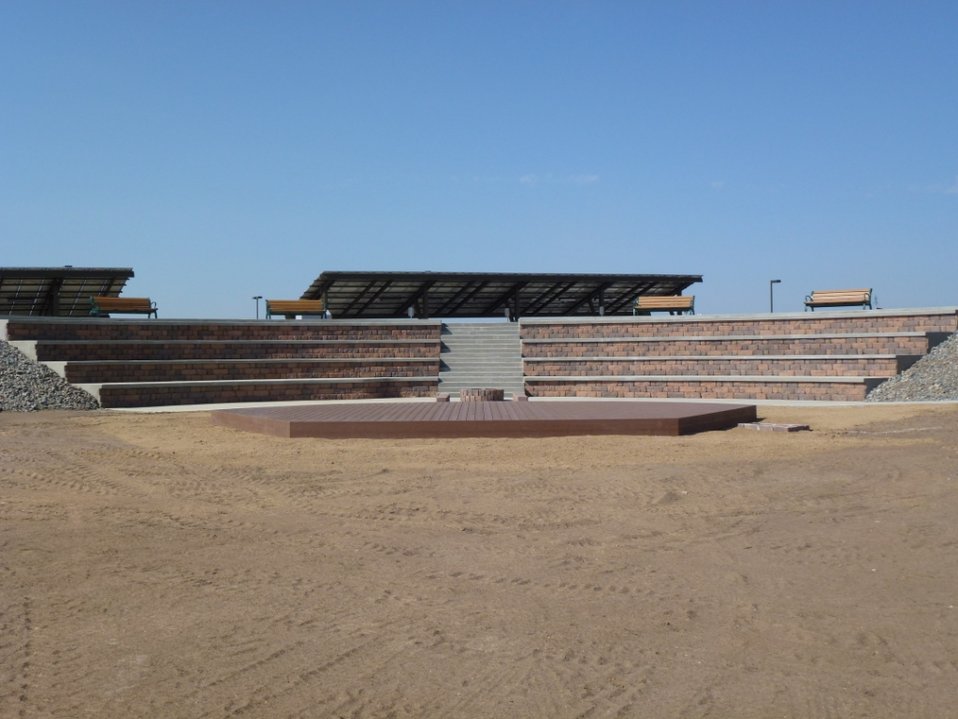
Rocky Mountain Arsenal National Wildlife Refuge’s Amphitheater

Thanks to the work of a Mountain-Prairie Region Refuge Maintenance Action Team (MAT), a new amphitheater was recently erected adjacent to the Rocky Mountain Arsenal National Wildlife Refuge’s visitor center in Commerce City, Colo.

The amphitheater is a fully accessible facility with seating for 175 to 200 spectators. It features a stage and fire pit for special programs. The addition of the amphitheater to the visitor center will enhance interpretive program delivery as part of the facility’s regular visitor services and will be used for special events. Commerce City has also expressed an interest in using the amphitheater for programs of its own.

The project was completed under budget and cost nearly half as much as the bids received from private contractors. According to rough estimates, the U.S. Fish & Wildlife Service saved approximately $70,000. The substantial cost savings was realized by employing the MAT, which is comprised of in-house maintenance workers with various skill sets from several stations across the region. Typically, deferred maintenance dollars pay for the project materials, labor, travel, room and board of MAT members. MAT projects usually take between one to five weeks to complete.

Construction began May 7, 2012 and concluded June 13, 2012 with a one-week pause in the middle of the project to allow MAT members a break. In total, the project took 34 12-hour-work days. The MAT worked more than 2,000 man hours on the project with no time lost due to injury or any safety-related issues.

The Refuge MAT consisted of:
• Rich Iwanski – Bear River Migratory Bird Refuge – Engineering Equipment Operator – Pre-construction organization, MAT team foreman, Equipment Operator and other general work.
• Cameron Fenrich – Mountain-Prairie Regional Office – Civil Engineer – Project Manager, Project Engineer, amphitheater design, on-site inspections, general construction work and overall construction and MAT team organization.
• Steve Raney – Baca National Wildlife Refuge – Maintenance Worker - Equipment Operator and other general work.
• Justin Wanzek – Valley City Wetland Management District – Maintenance Worker- Equipment Operator and other general work.
• Delbert “Skip” Palmer – Lee Metcalf National Wildlife Refuge – Maintenance Worker - Concrete Specialist and other general work.
• Tom Ronning – Rocky Mountain Arsenal National Wildlife Refuge – Range Conservationist - Truck Driver and other general work.